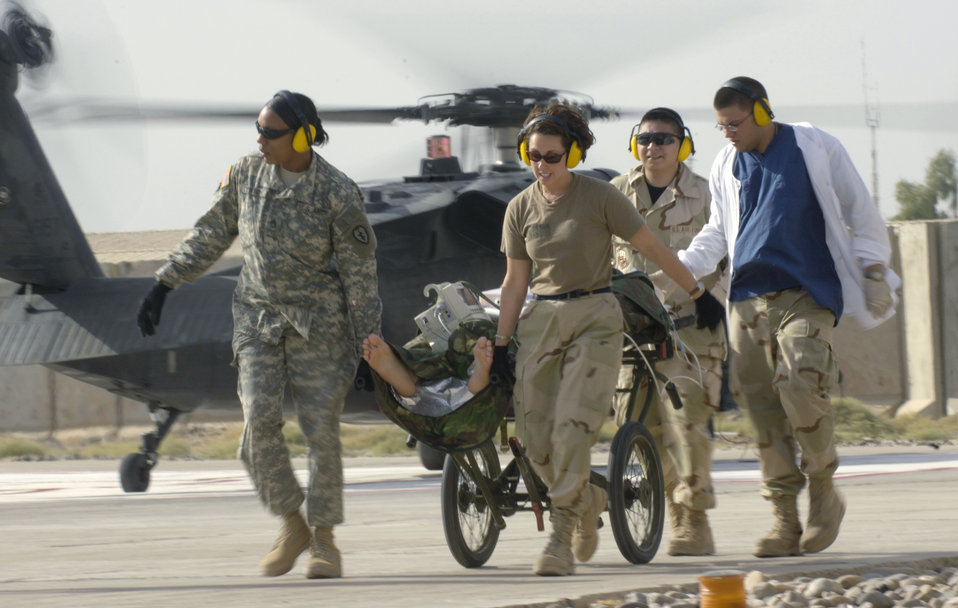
Medical specialists on the job

Army Staff Sgt. Tanisha Denton, Staff Sgt. Stacy McGill and Senior Airman Armando Pena assist Senior Airman Brett Batson in transporting a wounded Soldier from a helicopter into the Balad Air Base, Iraq, hospital emergency room Oct. 1. The medical personnel are deployed from the 25th Infantry Division at Schofield Barracks, Hawaii; the 59th Medical Wing at Lackland Air Force Base, Texas; and the 99th Medical Group at Nellis AFB, Nev.